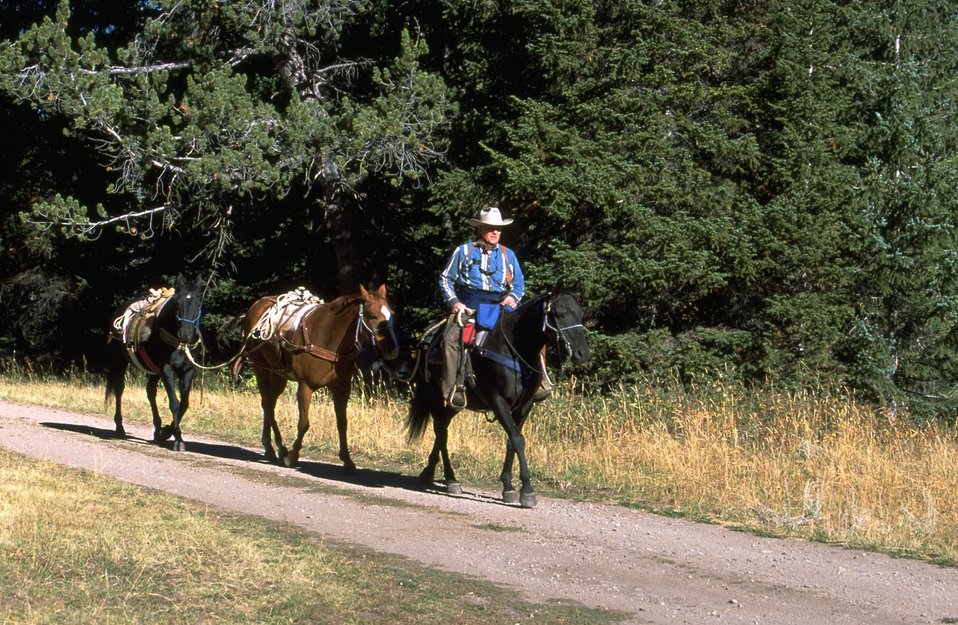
Rider leading a pack string of two horses